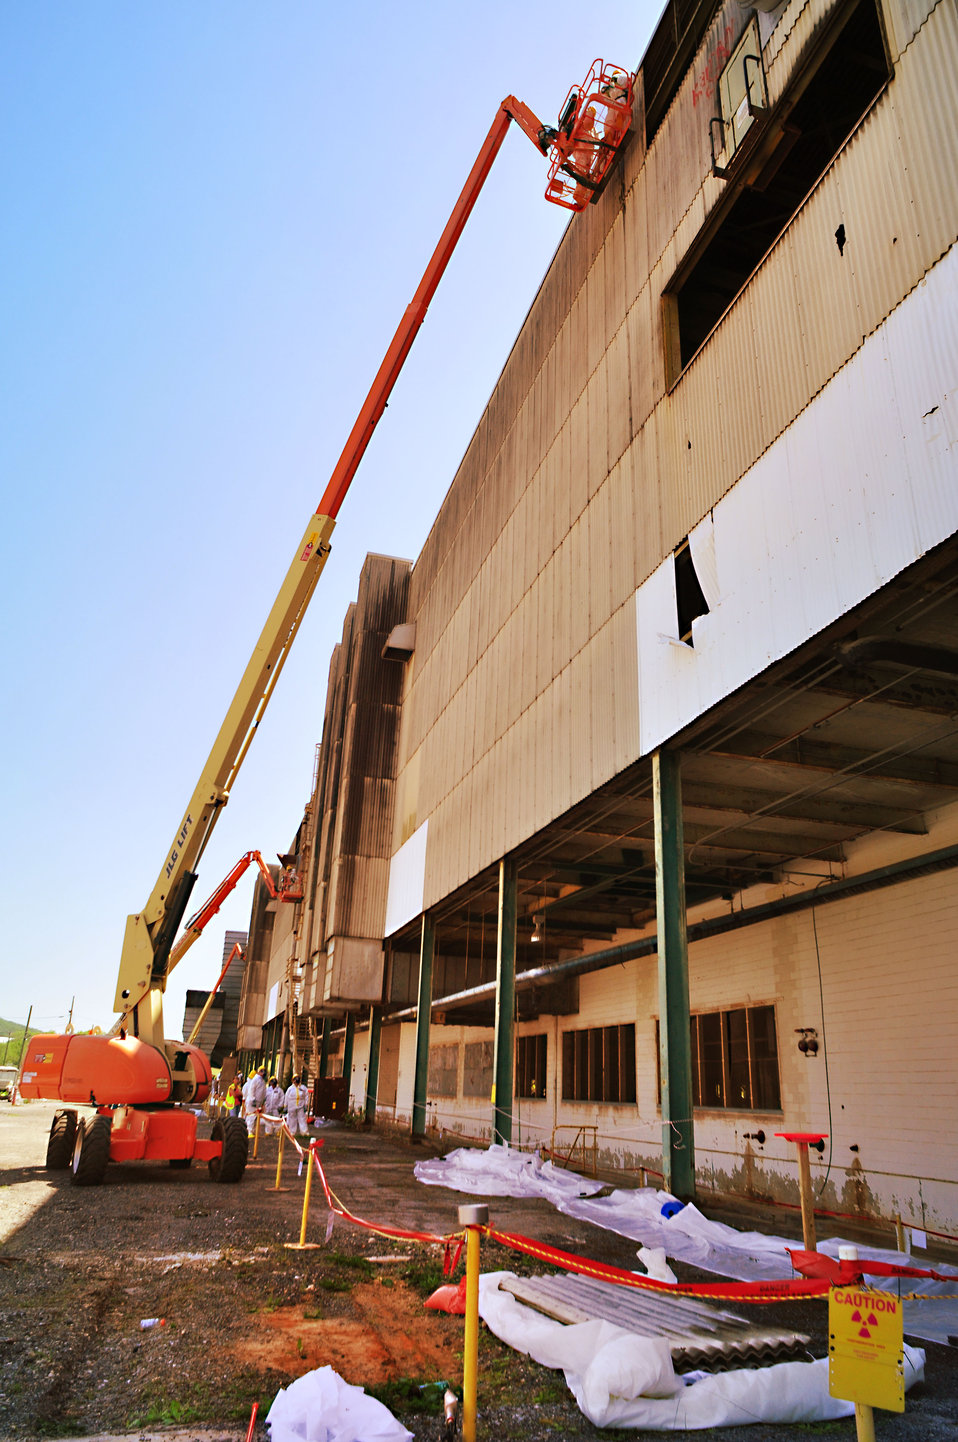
Transite Panels Removal from K-31 Building 2014 Oak Ridge

14-057 DOE photo Lynn Freeny 5-6-2014 ETTP K-31 Oak Ridge Tennessee